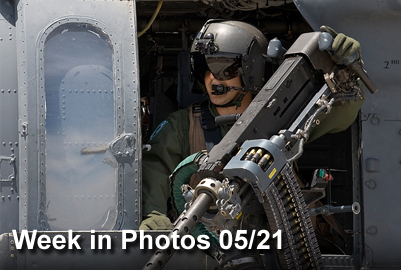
Week in Photos

Air Force Week in Photos for May 21, 2010, highlights photos from around the Air Force. In this photo by Airman 1st Class Brett Clashman, Staff Sgt. Kevin Darosa waits to take off as part of a scramble exercise May 13, 2010, at the flightline at Nellis Air Force Base, Nev. Sergeant Darosa is an helicopter aerial gunner with the 66th Rescue Squadron.